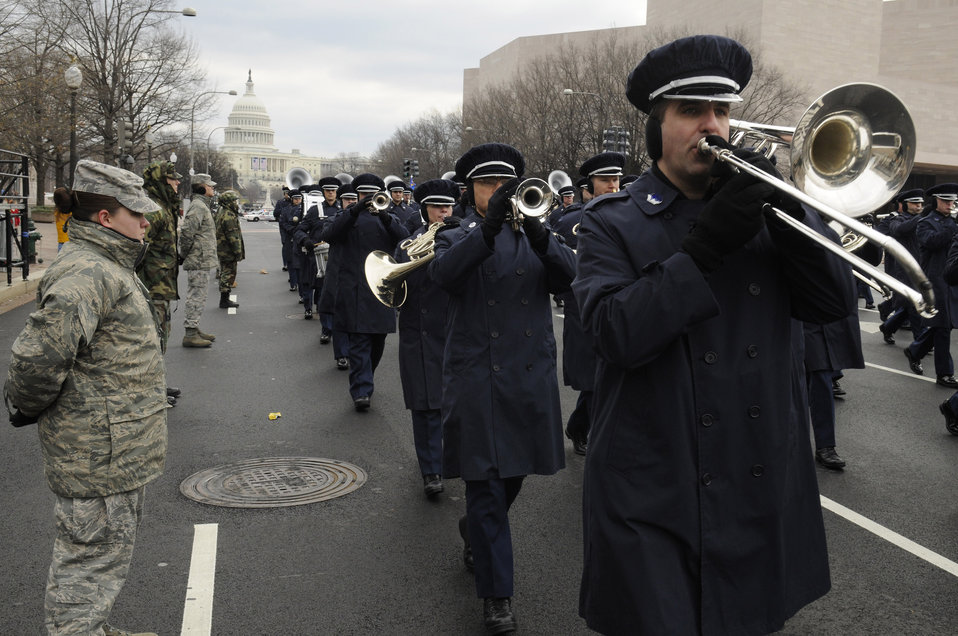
Practice makes perfect

Members of the Air Force Band march down Constitution Avenue as Airmen from the Air Force District of Washington stand in a cordon during a practice run of the inauguration parade for President-elect Barack Obama Jan. 11 in Washington, D.C.